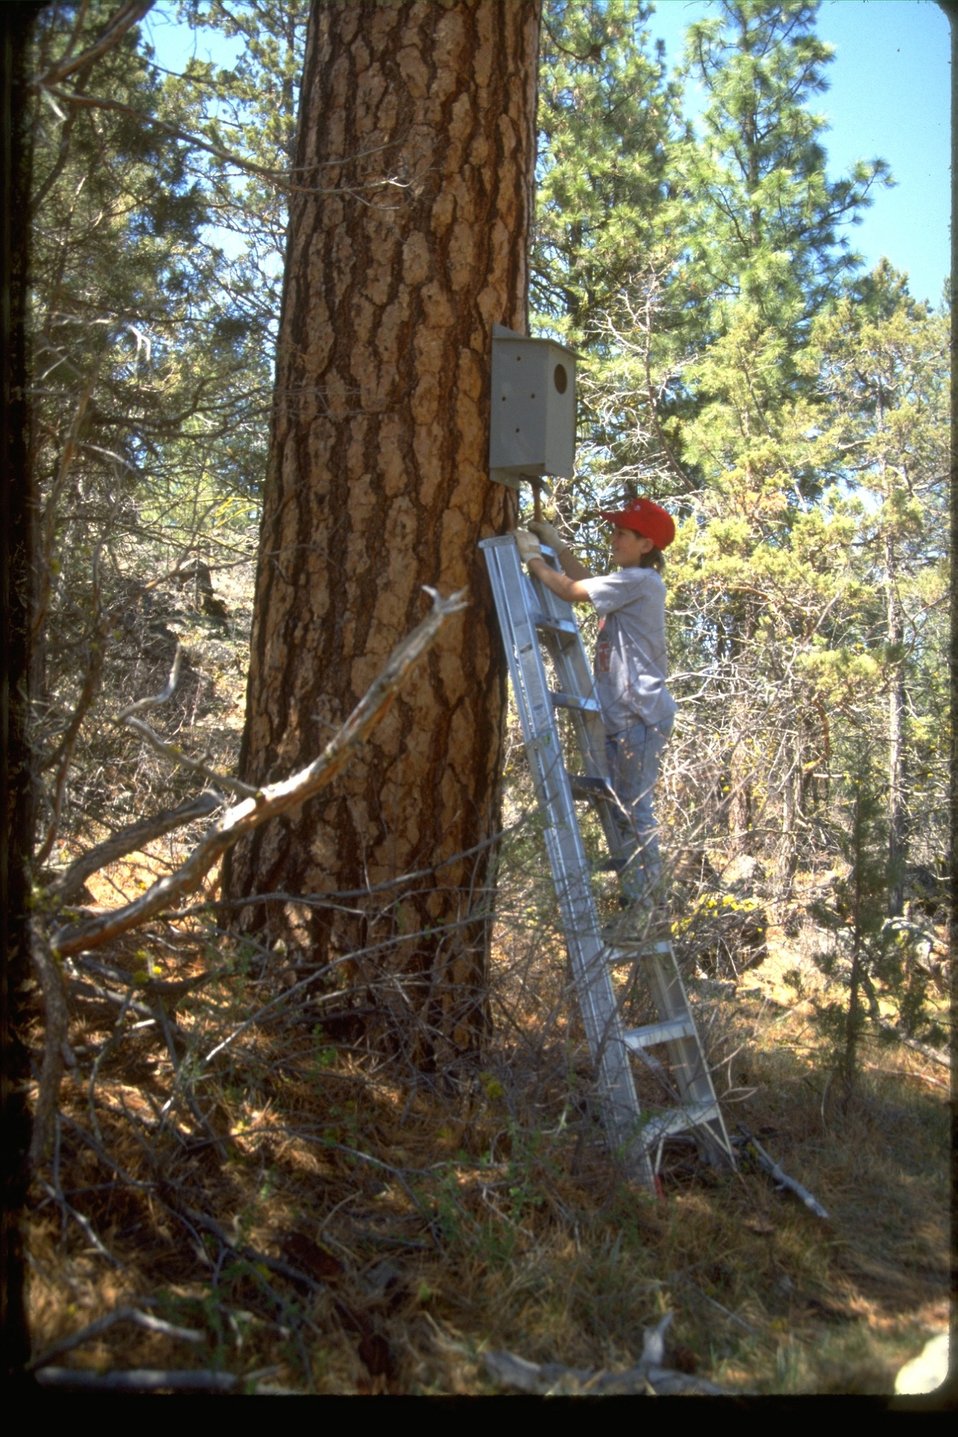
Boy Scout installing a bird house as part of a volunteer project at Gerber.